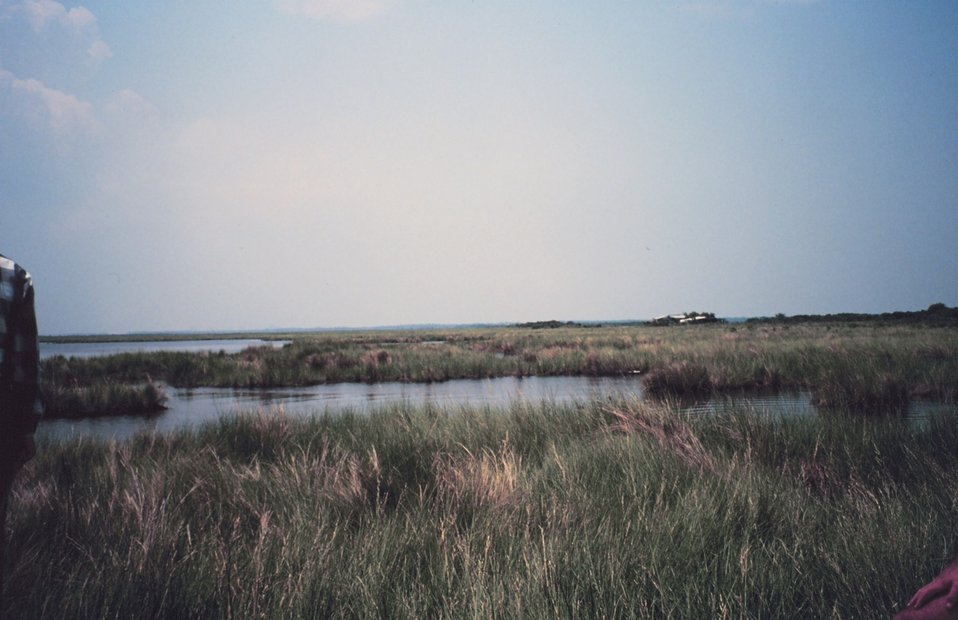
Broken marsh in Barataria Basin just west of the levee